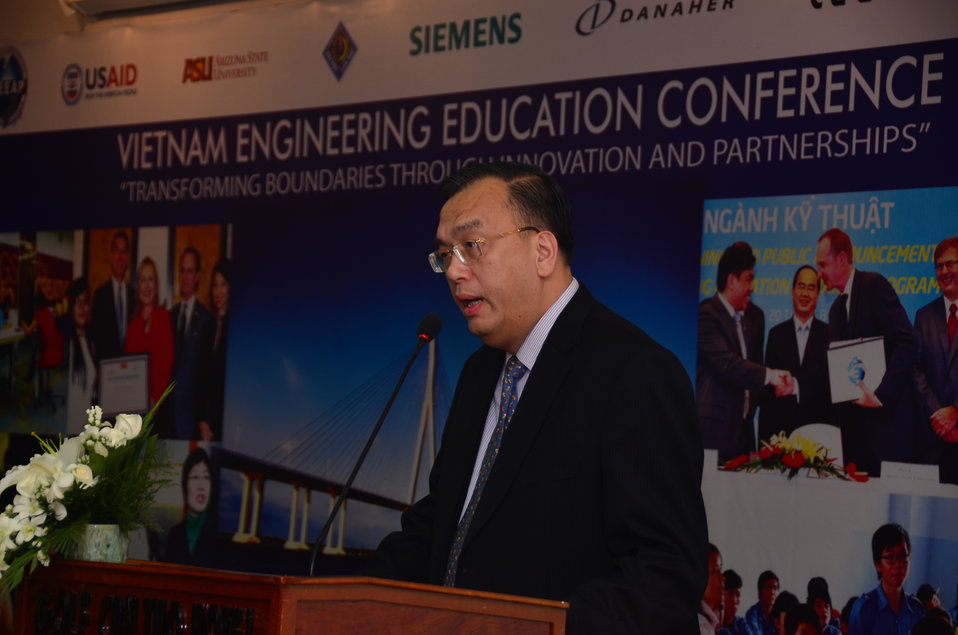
U.S. Consul General An Le speaks at the HEEAP Conference

March 19, 2013, Can Tho.